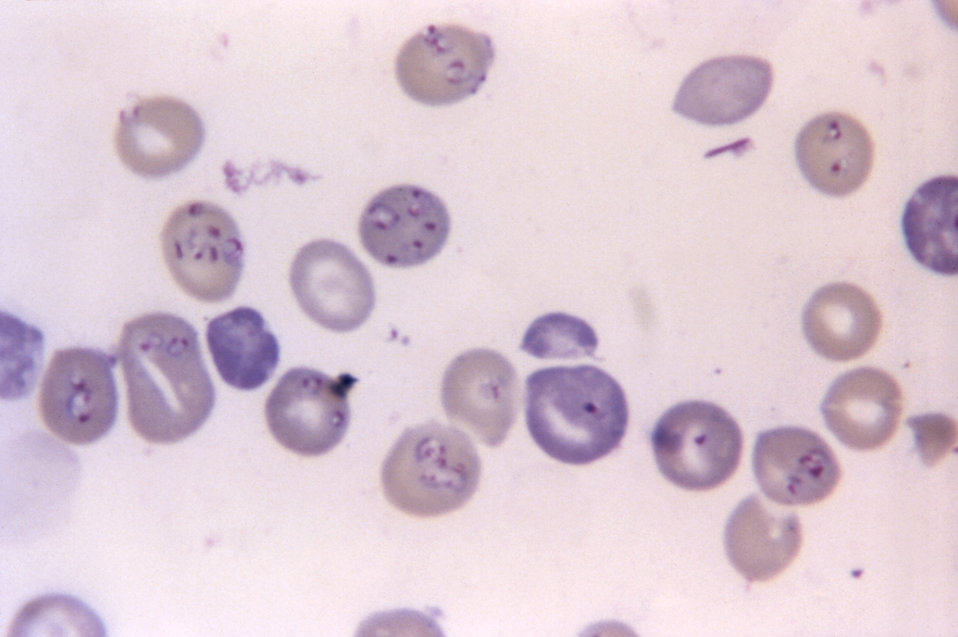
These Giemsa stained hamster red blood cells contain both Babesia microti and Plasmodium berghei; Mag. 1125X.